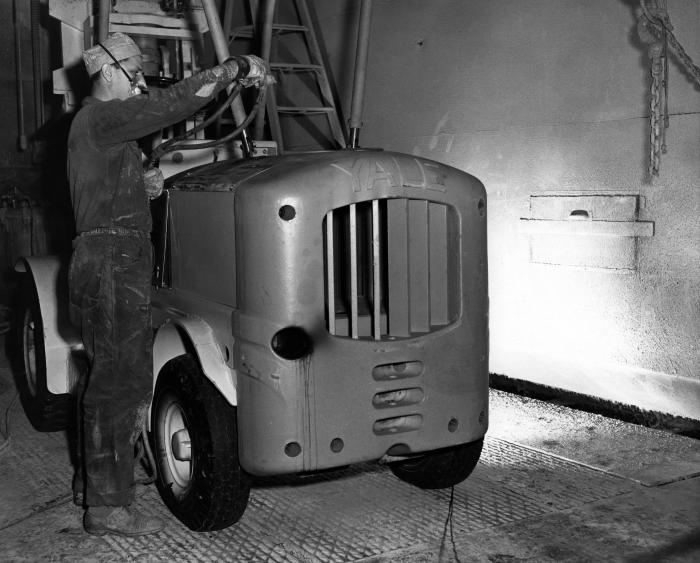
This historic image, provided by the Center for Disease Control's (CDC), National Institute for Occupational Safety and Health (NIOSH), depicted an inductrial worker inside a Yale Towne Mfg. Co. paint spray booth. The worker was photographed while in the process of applying paint using a spray gun, and was seen wearing a filtered breathing mask, as well as gloves, a head covering, and a full-body uniform, all protective in nature. See Phil 9563 for a complete view of the spray booth's interior. Though technologic advancements made many of the formerly manual tasks easier, and faster, the potential dangers lurking inside such a factory, still mandated, and mandates even today, the adherence to strict protocols in order to create a safer working environment.